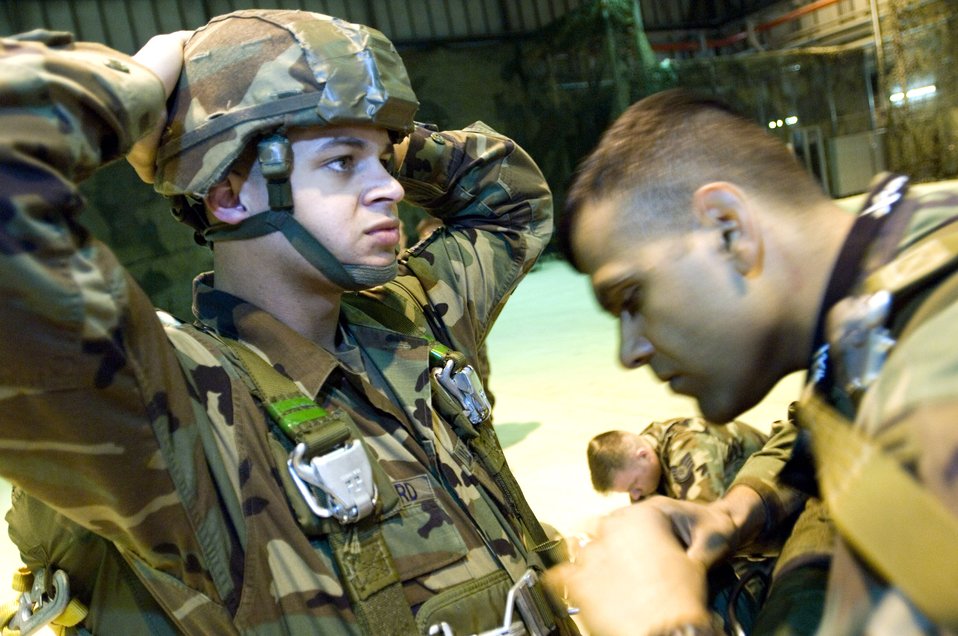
Multinational training

Army 1st Lt. Rajesh Ramlakhan verifies that Staff Sgt. James Woodford's parachute is safe and ready for the day's mission prior to launching from Ramstein Air Base, Germany, on Thursday, April 27, 2006. Sergeant Woodford is with the 786th Security Forces Squadron's airborne operations section at Sembach Air Base, Germany. Lieutenant Ramlakhan is with the 5th Quartermaster Detachment at Kleber Kaserne.